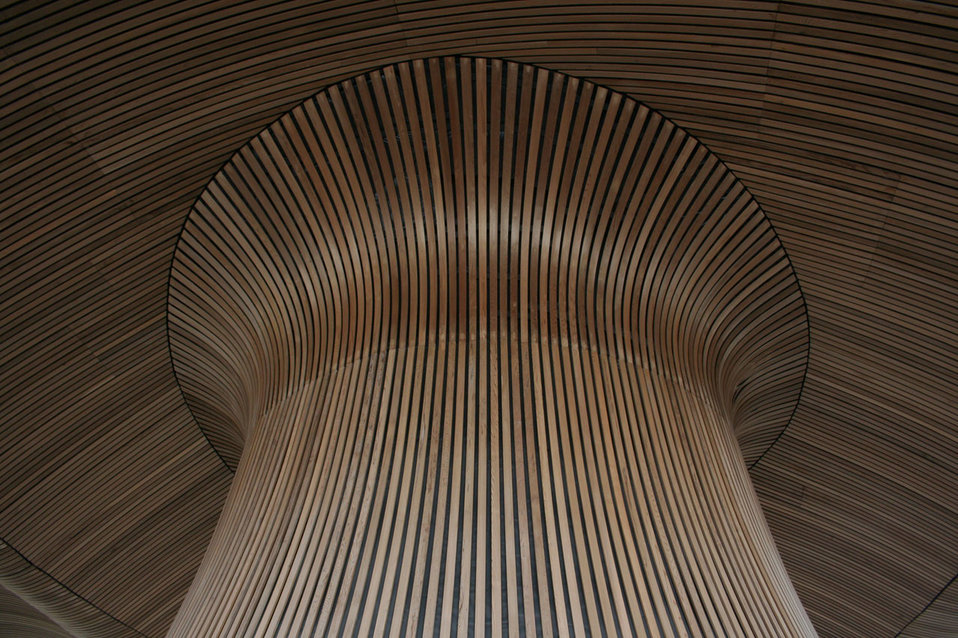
Wood ceiling pattern.